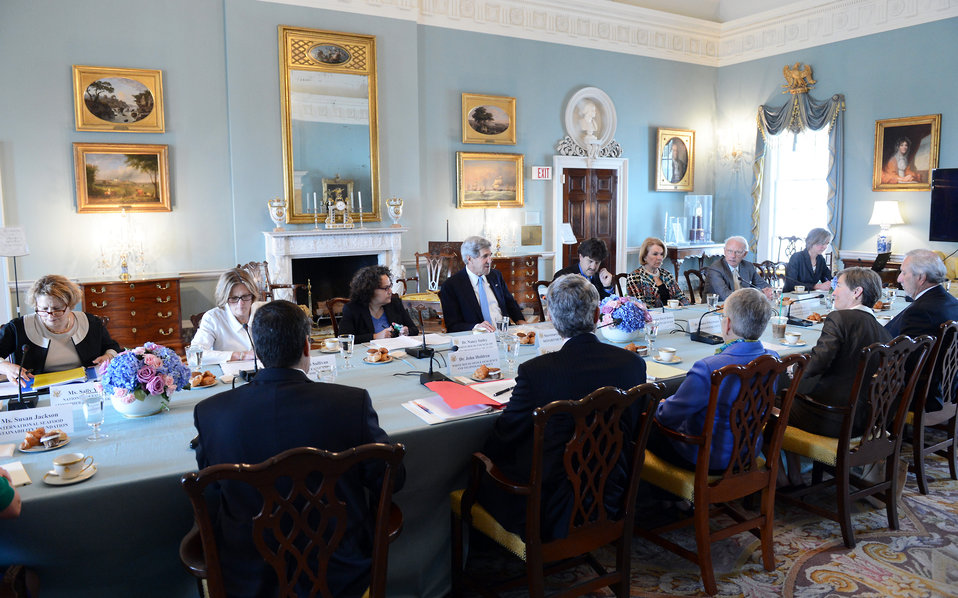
Secretary Kerry Hosts the Oceans Conference Roundtable

U.S. Secretary of State John Kerry hosts the Oceans Conference Roundtable at the U.S. Department of State in Washington, D.C., on June 6, 2013.